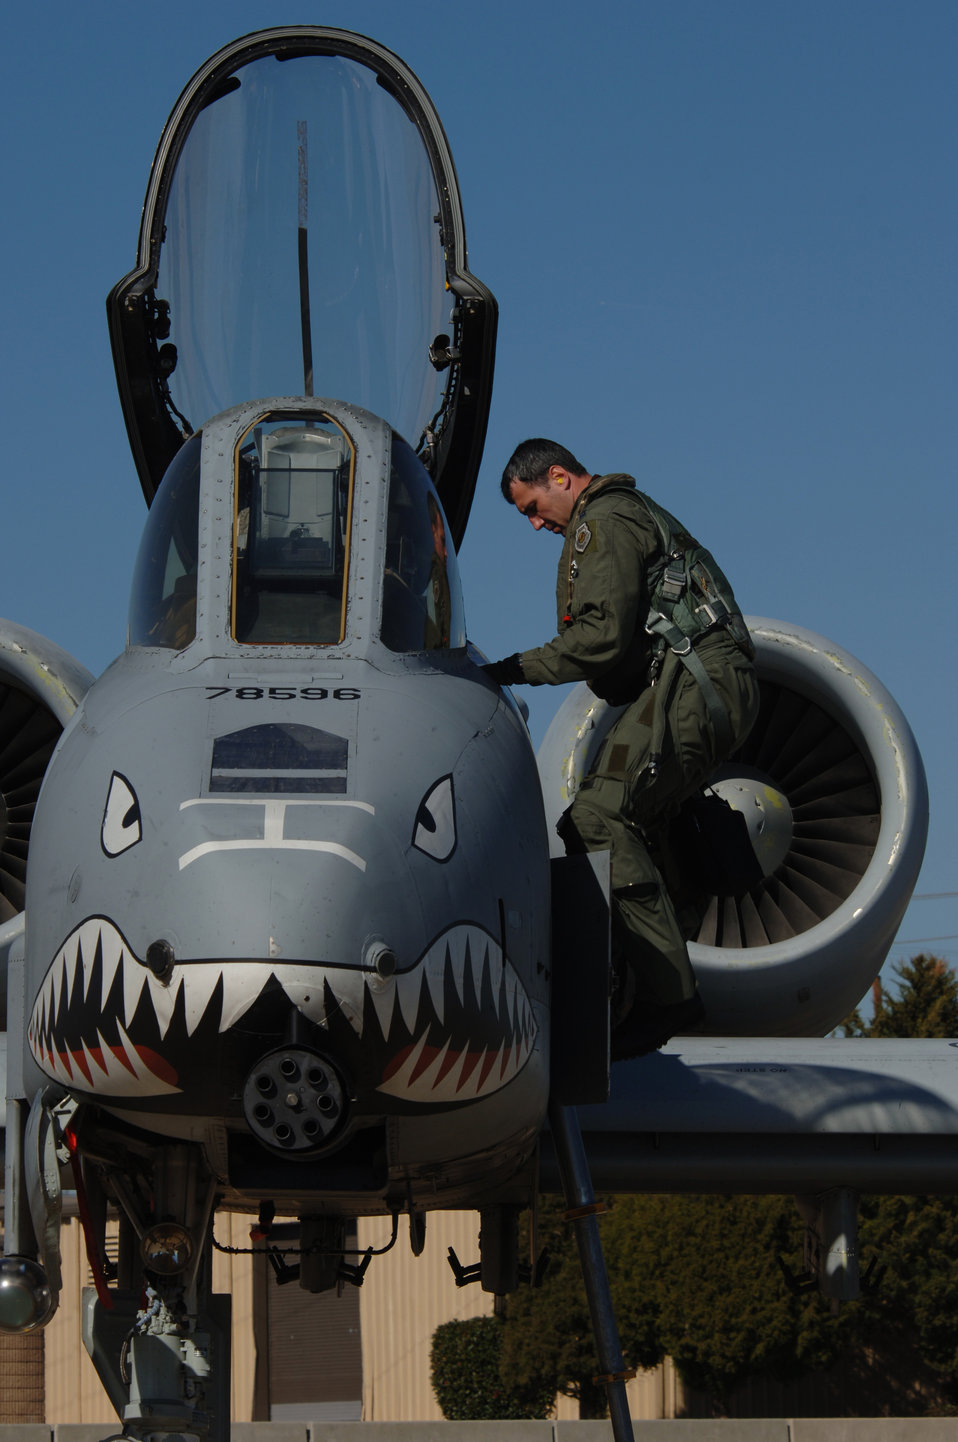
Dynamic Weasel

SHAW AIR FORCE BASE, S.C. (AFPN) -- Capt. Ryan Haden climbs down from his A-10 Thunderbolt II after flying a mission in support of Operation Dynamic Weasel. The operation is a multi-aircraft exercise imitating combat operations currently taking place in Southeast Asia.